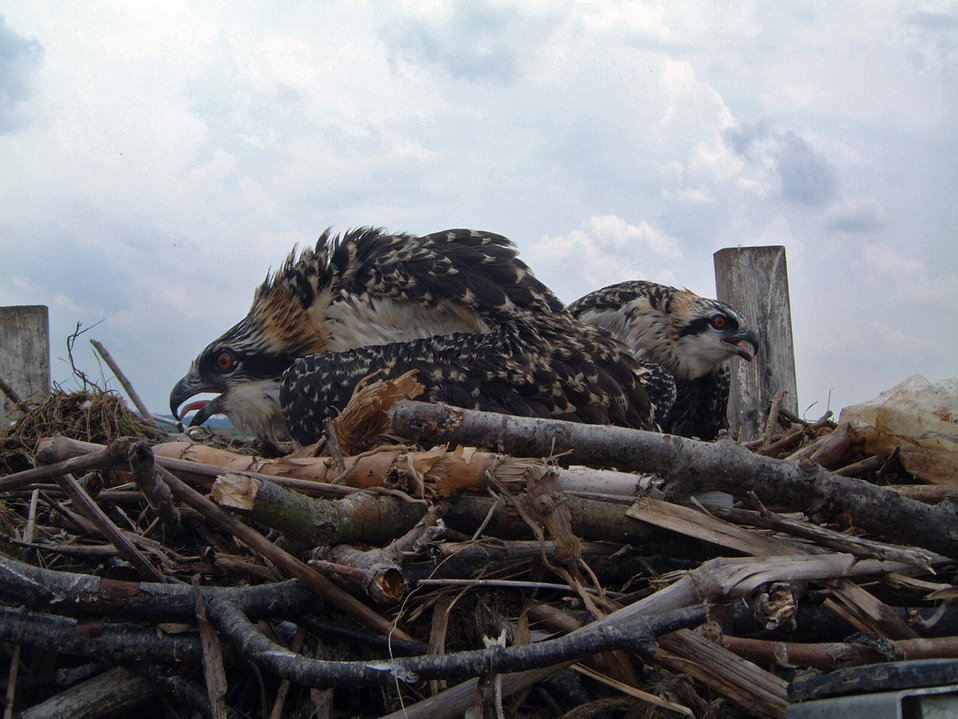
Osprey

Ospreys in their nest at Prime Hook National Wildlife Refuge.